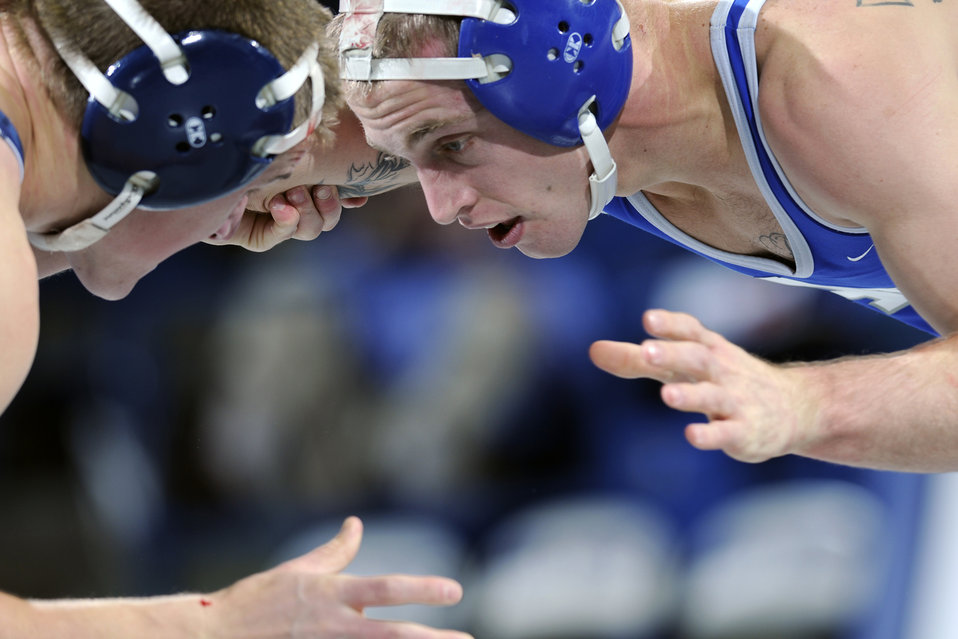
Falcons lose in first home contest

Falcon junior Derek Gillespie wrestles Colorado School of Mines' Dylan Lewis in the 141-lb. weight class during the U.S. Air Force Academy's first home contest of the season at Clune Arena Dec. 11, 2009. Gillespie recorded a fall over Lewis at the end of the first period. Air Force defeated Colorado School of Mines, 33-13.